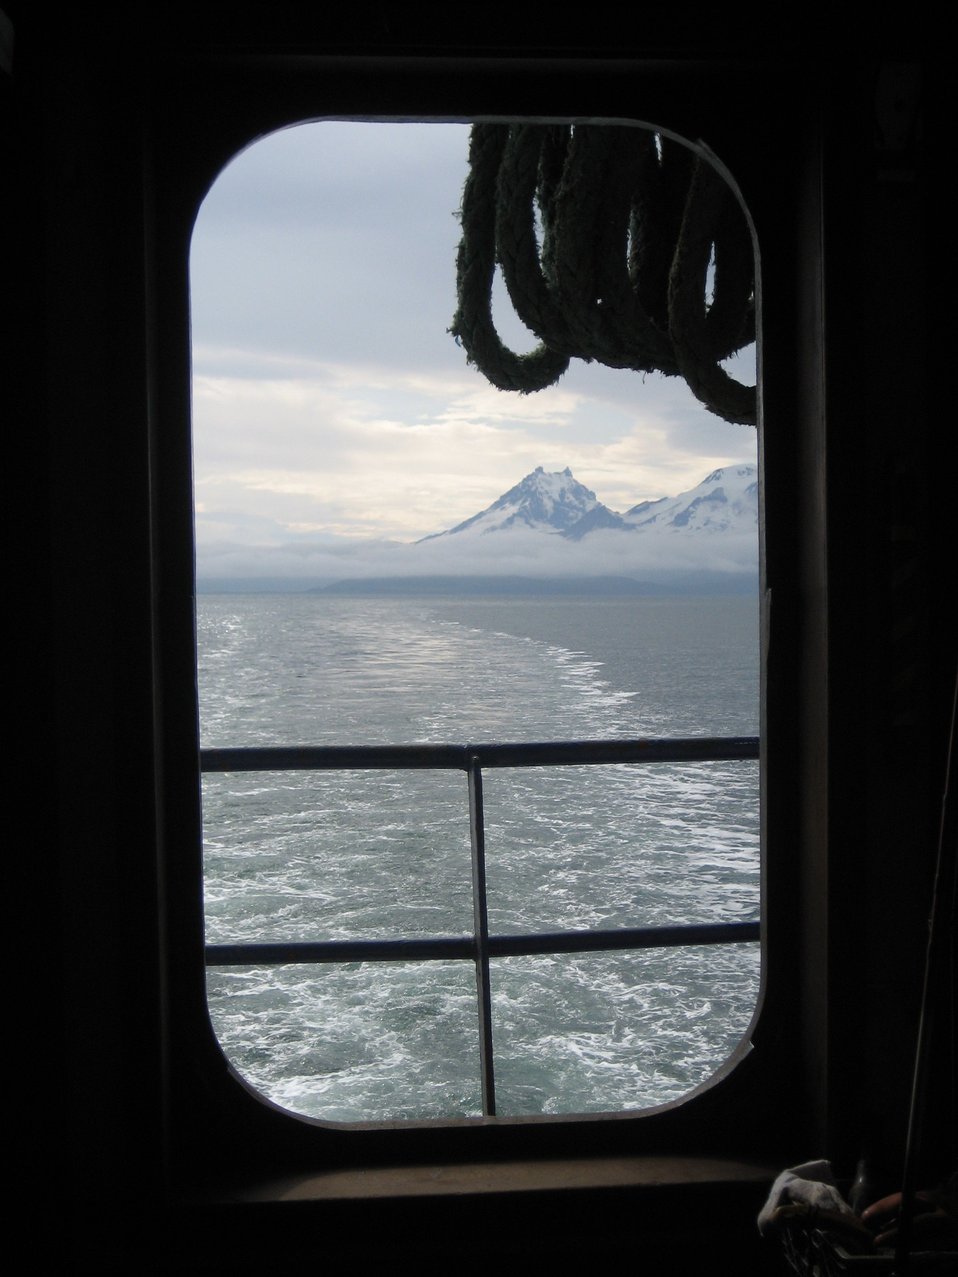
Isanotski (left) and Roundtop Volcanoes